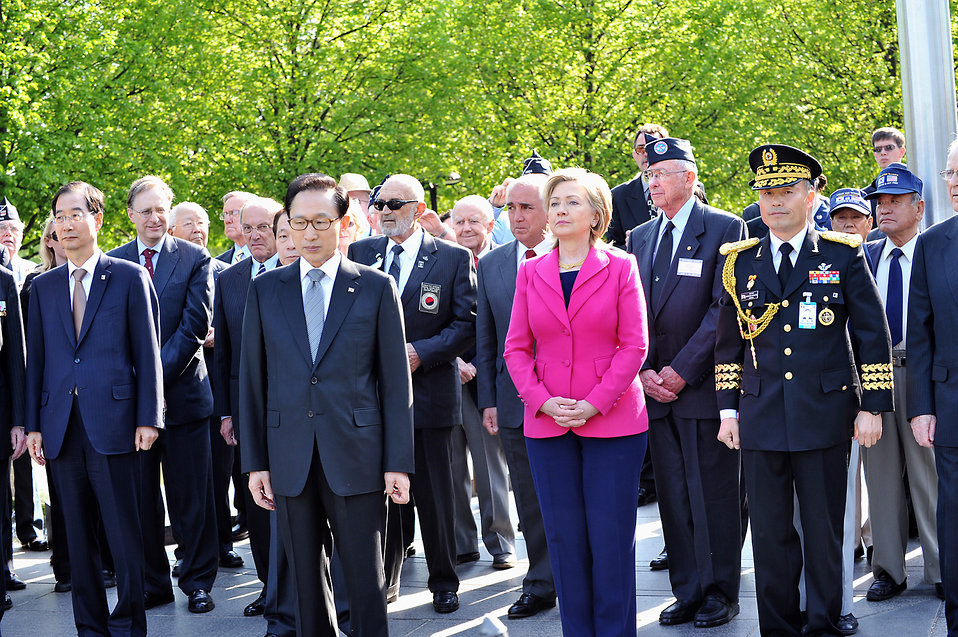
Secretary Clinton Marks 60th Anniversary of the Korean War

U.S. Secretary of State Hillary Rodham Clinton participates in a wreath laying ceremony with Korean President Lee Myung-bak on the 60th Anniversary of the Korean War, at the Korean War Memorial in Washington, DC April 12, 2010.